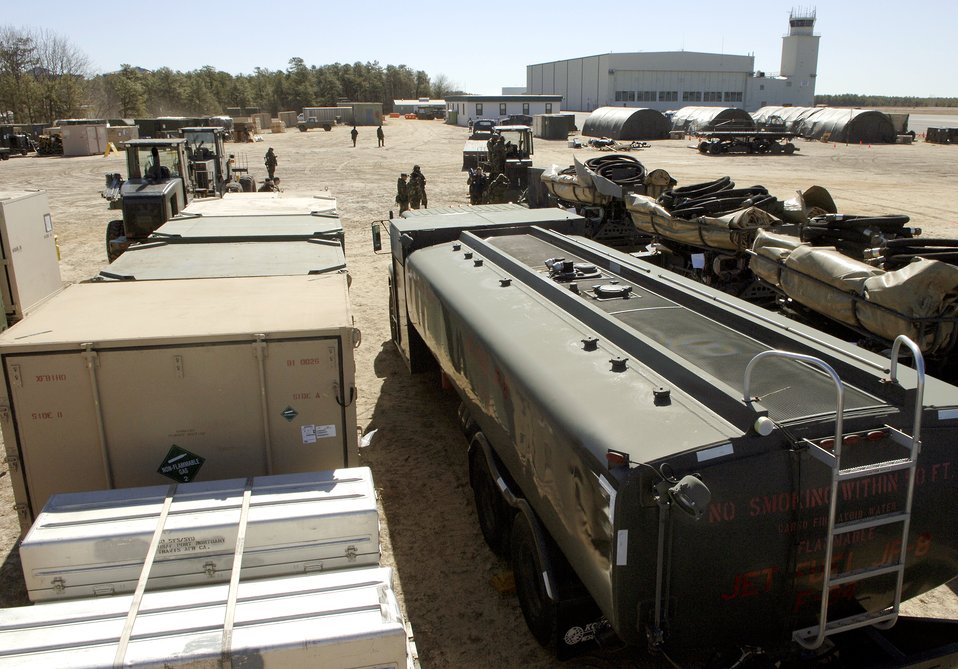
Exercise Eagle Flag

Cargo is prepared for distribution during Exercise Eagle Flag's humanitarian relief operations Sunday, March 5, 2006 at Naval Air Engineering Station Lakehurst, N.J. Eagle Flag is designed to simulate real-world conditions as closely as possible. By the time the exercise ends March 10, Airmen will have processed and distributed more than 100,000 pounds of humanitarian aid. This is the first time the exercise has had a humanitarian relief operations scenario.